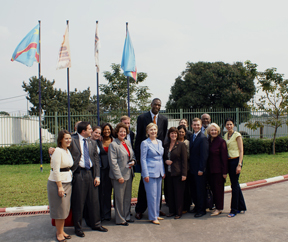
Secretary Clinton Visits Mutombo Hospital

U.S. Secretary of State Hillary Rodham Clinton visits the Biamba Marie Mutombo Hospital in Kinshasa, Democratic Republic of Congo August 10, 2009.